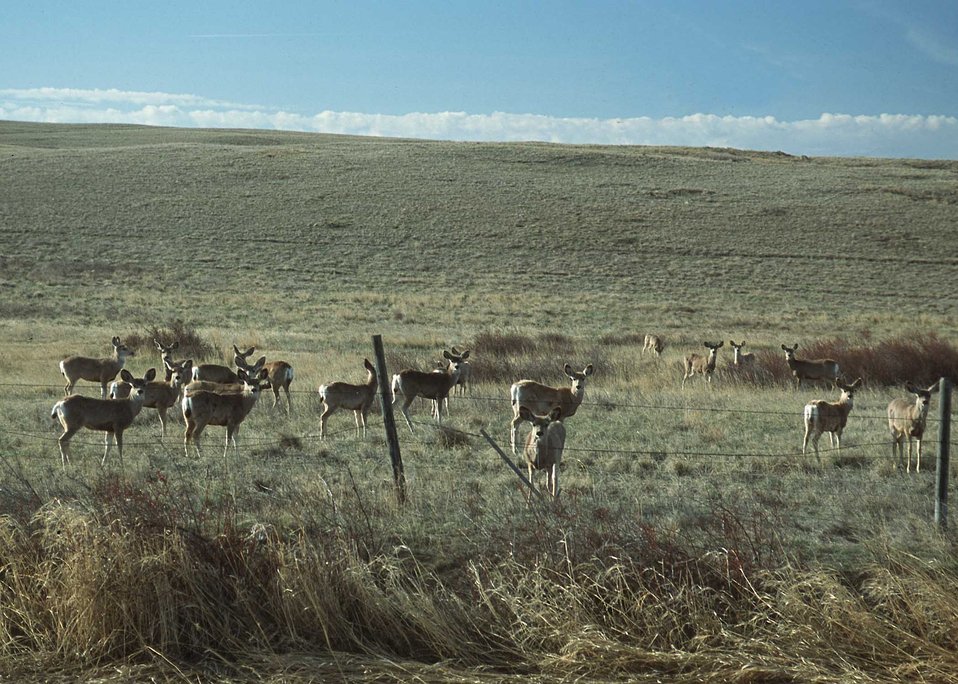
Deer utilize rangelands in northcentral Montana.